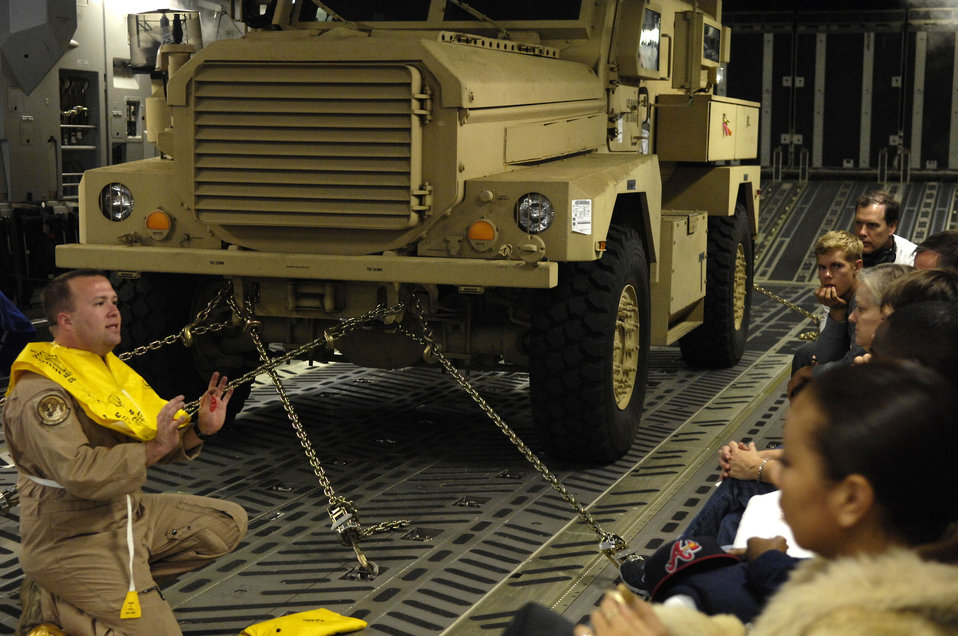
C-17 Reaches Across the Globe

Staff Sgt. Lucas P. Crumpton, a loadmaster and native of Lewisville, Texas, briefs space available passengers on safety procedures before departing Andersen Air Force Base, Guam, for Kadena Air Base, Japan, Dec. 28, 2008.